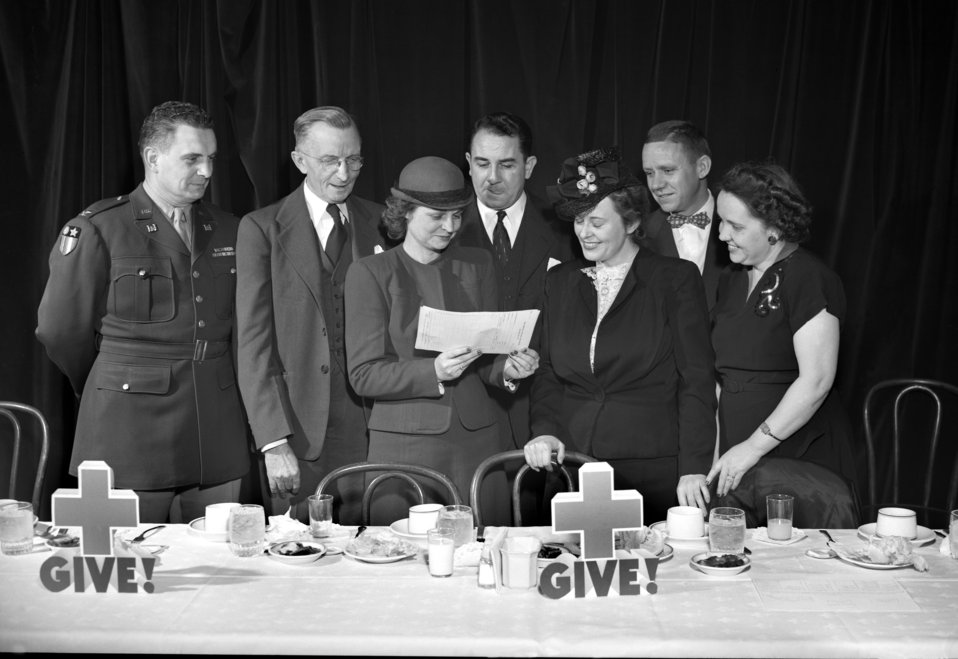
Red Cross Dinner Oak Ridge 1947

3303-4 DOE photo Ed Westcott 2-18-1947 L to R Col. P.F. Kromer, Cecil O. Burns, Hope Buck, T. William Rodes, Mrs.Mary Pegram, William Bonnet, and Mrs. Harry Owen Oak Ridge Tennessee